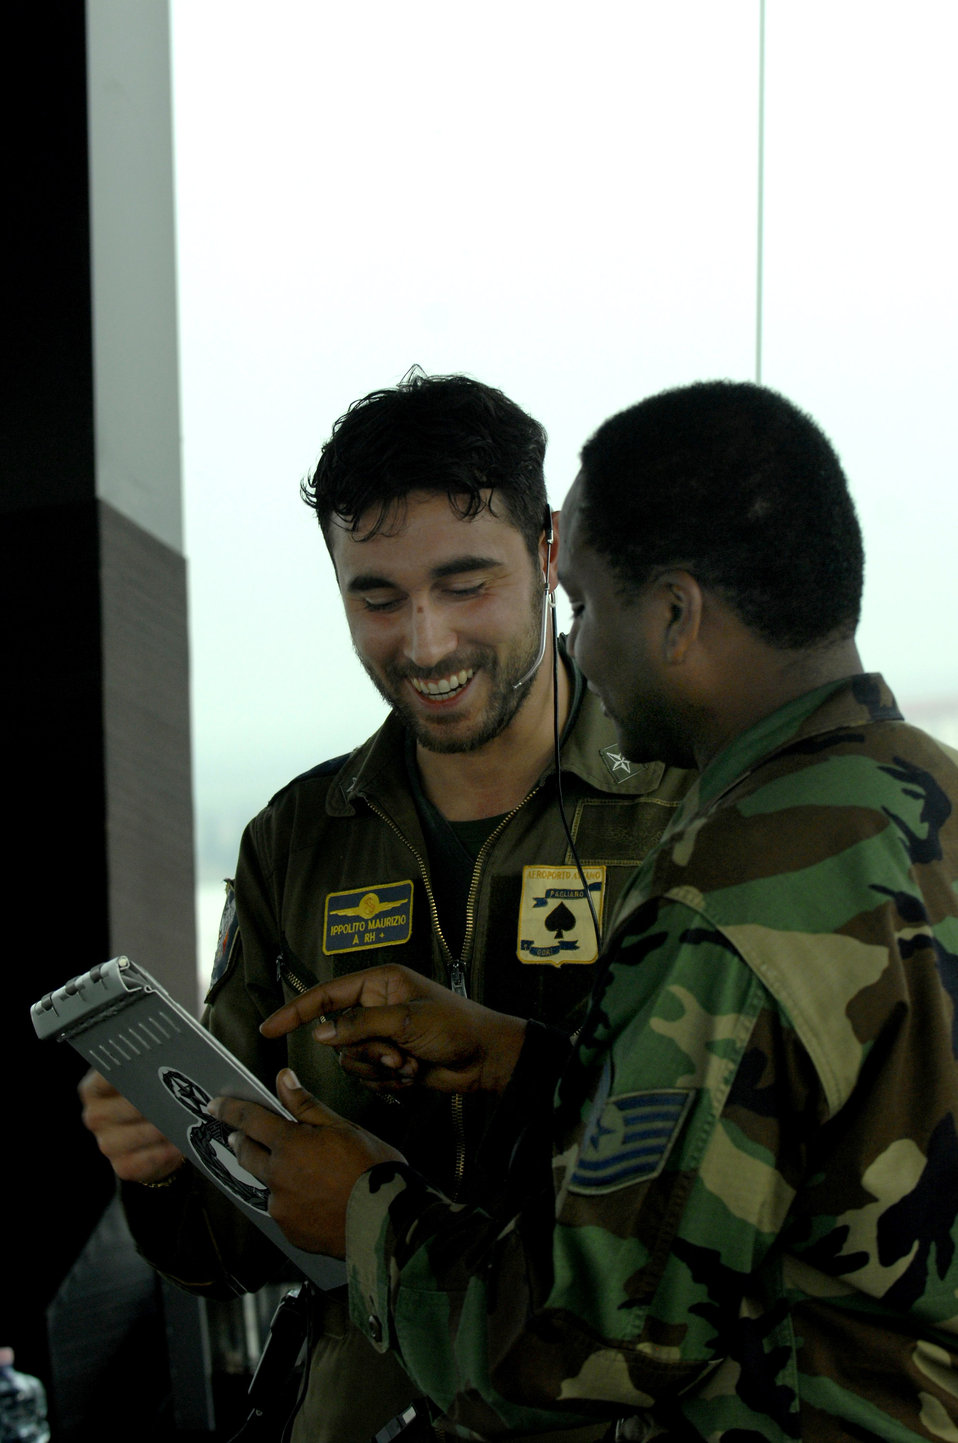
Tower stays on top of things

Italian air force Air Traffic Controller Ippolito Maurizio and Tech. Sgt. Kevin Cobb discuss airfield operations Nov. 28 at Aviano Air Base, Italy. Air traffic controllers perform duties within a radar facility and maintain radar surveillance of approach control airspace, processing and coordinating aircraft through terminal control.